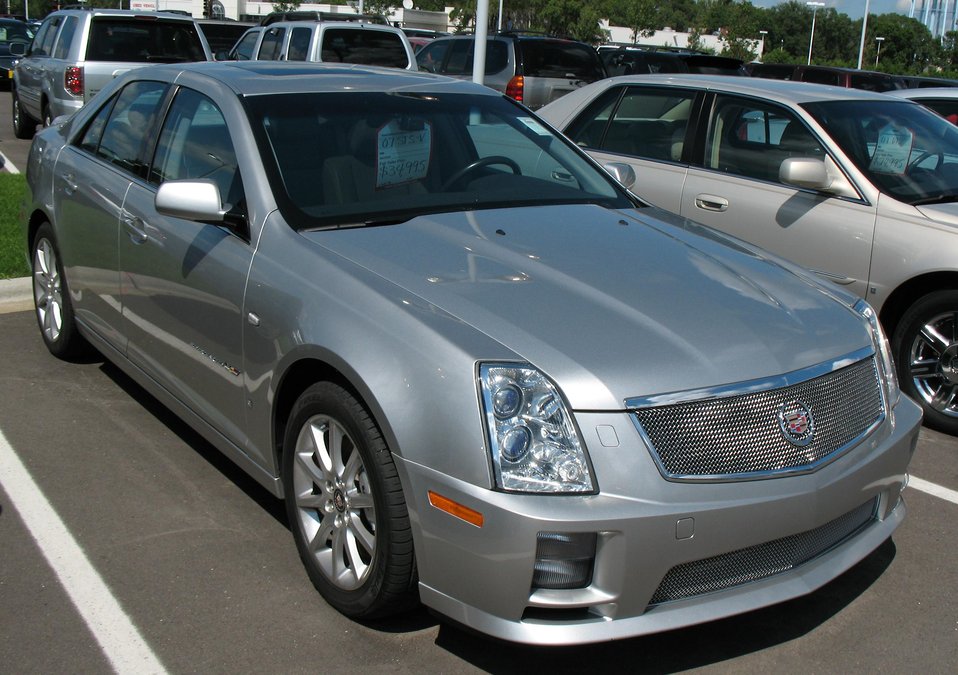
2010 Cadillac STS-V